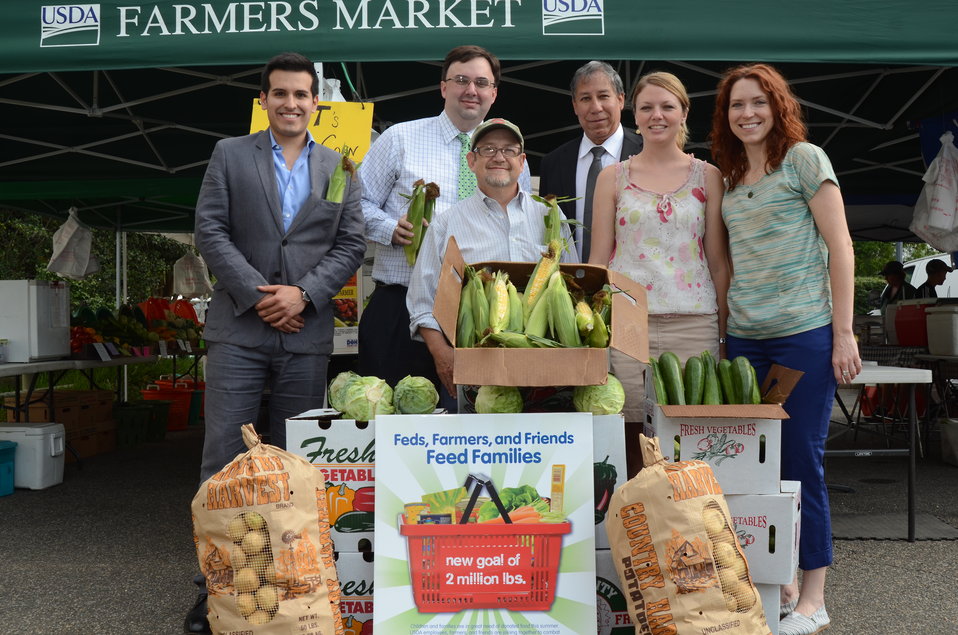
U.S. Department of Agriculture's (USDA) Marketing and Regulatory Programs (MRP) donates potatoes, corn, cabbage, and zucchini to the Feds Feed Families program at USDA's Farmers Market on Friday, June 22, 2012. (L to R U.S. Department of Agriculture's (USDA) Marketing and Regulatory Programs (MRP) intern Alex Canepa, USDA MRP Senior Advisor Mike Schmidt, USDA Organic & Sustainable Agriculture Policy Advisor Mark Lipson (directly behind corn), USDA Under Secretary MRP Ed Avalos, USDA MRP Special Assistant Lisa Bertelson, and USDA Deputy Under Secretary MRP Rebecca Blue).